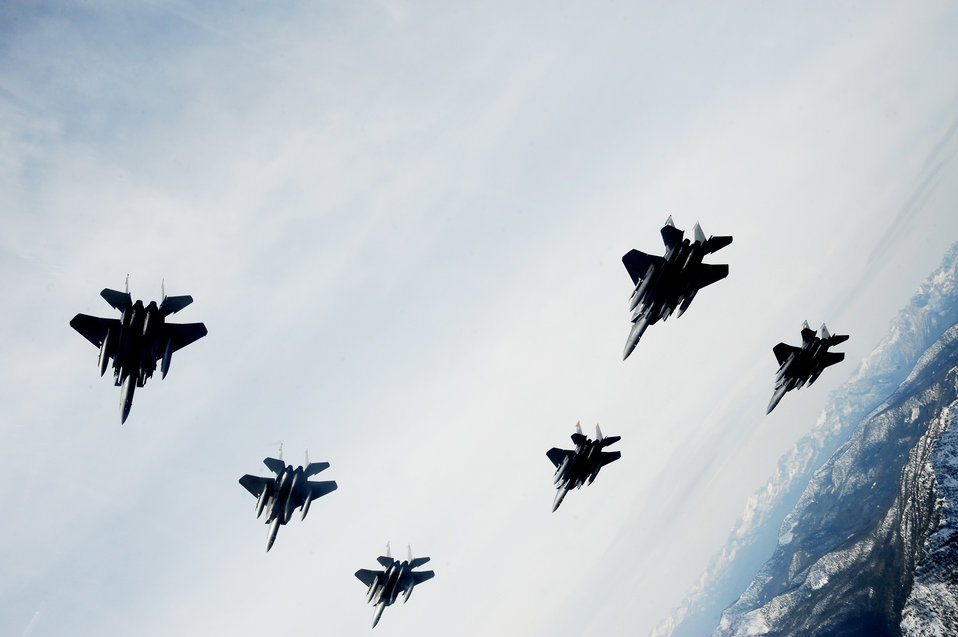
Flying over the Sawtooth Mountains

A six-ship formation of F-15C Eagle and F-15E Strike Eagles from the 366th Fighter Wing at Mountain Home Air Force Base, Idaho, fly over the nearby Sawtooth Mountains Oct. 13, 2009.